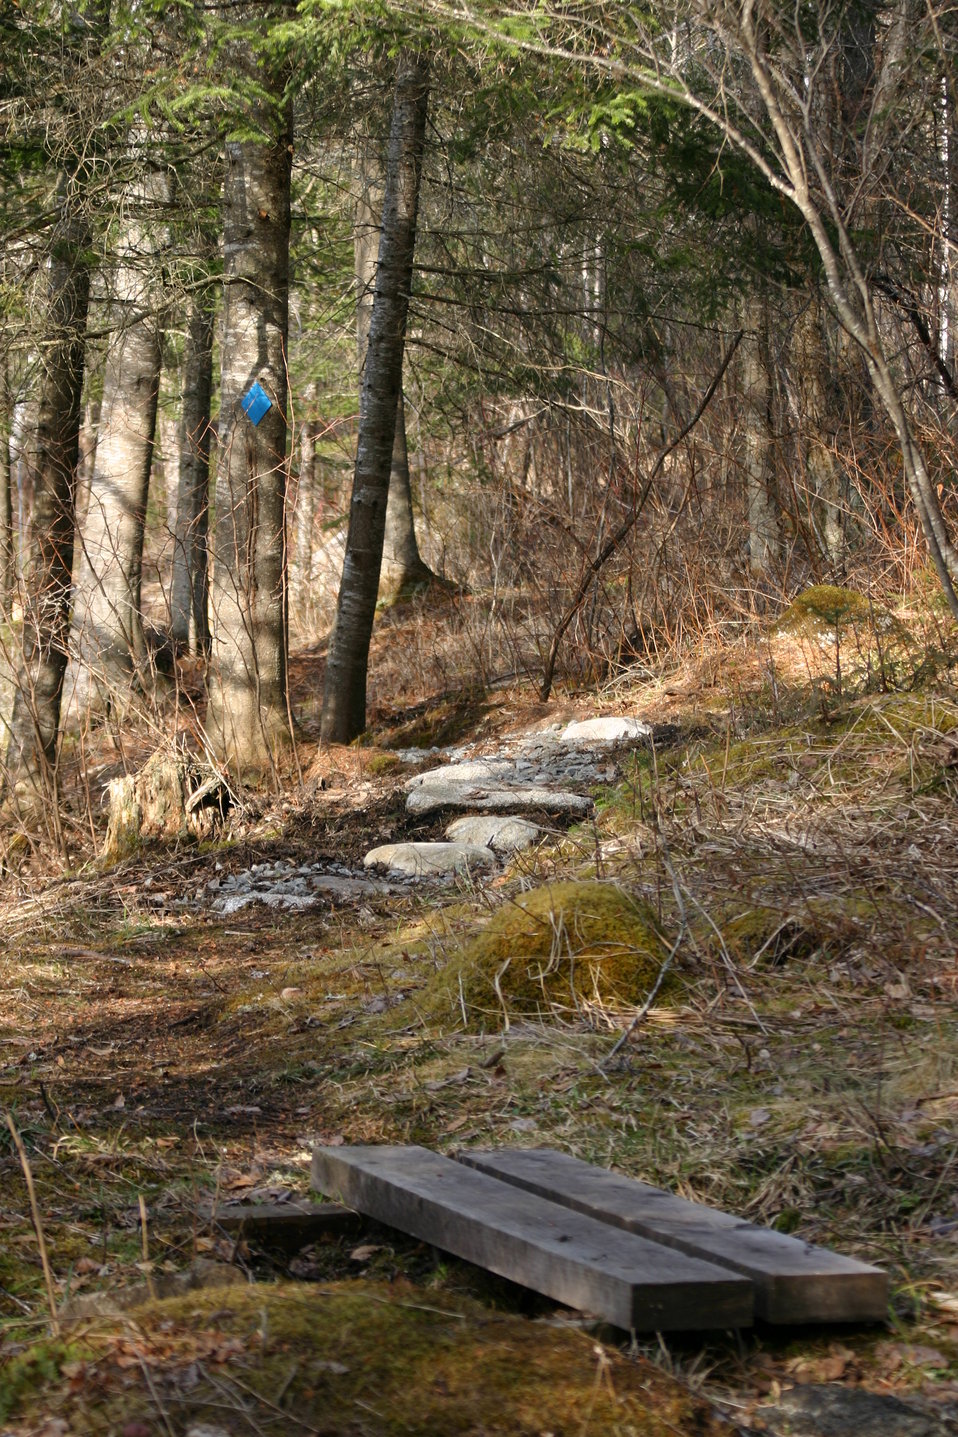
Nulhegan River Trail

Nulhegan Basin Division, Silvio O. Conte National Wildlife Refuge.